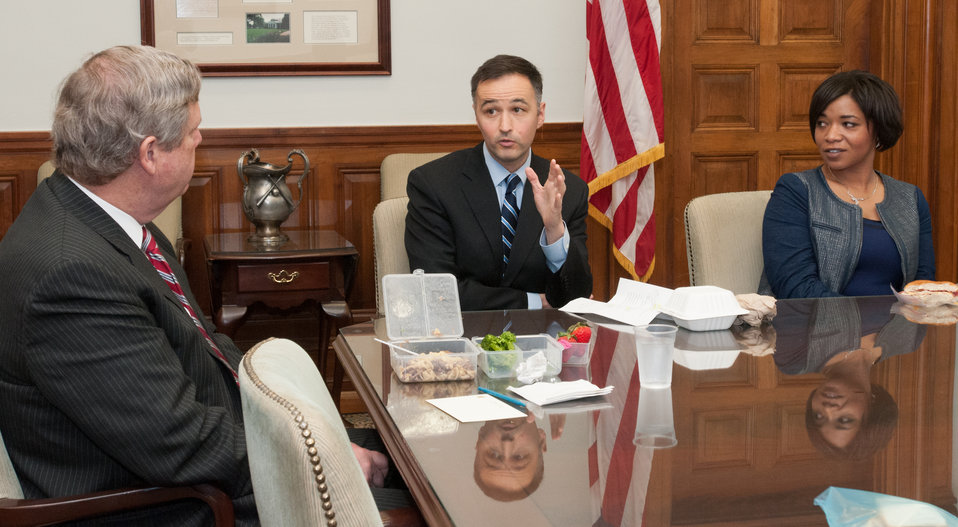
U.S. Department of Agriculture (USDA) Foreign Agricultural Service (FAS) Senior Advisor Patrick Kerrigan, center, talks about his role in the department as Agriculture Secretary Tom Vilsack, left, and Civil Rights Adjudicator Cinnamon Butler, right, listen during a Brown Bag Lunch that Secretary Vilsack periodically has with employees, in his conference room, onTuesday, April 9, 2013, in Washington, D.C.